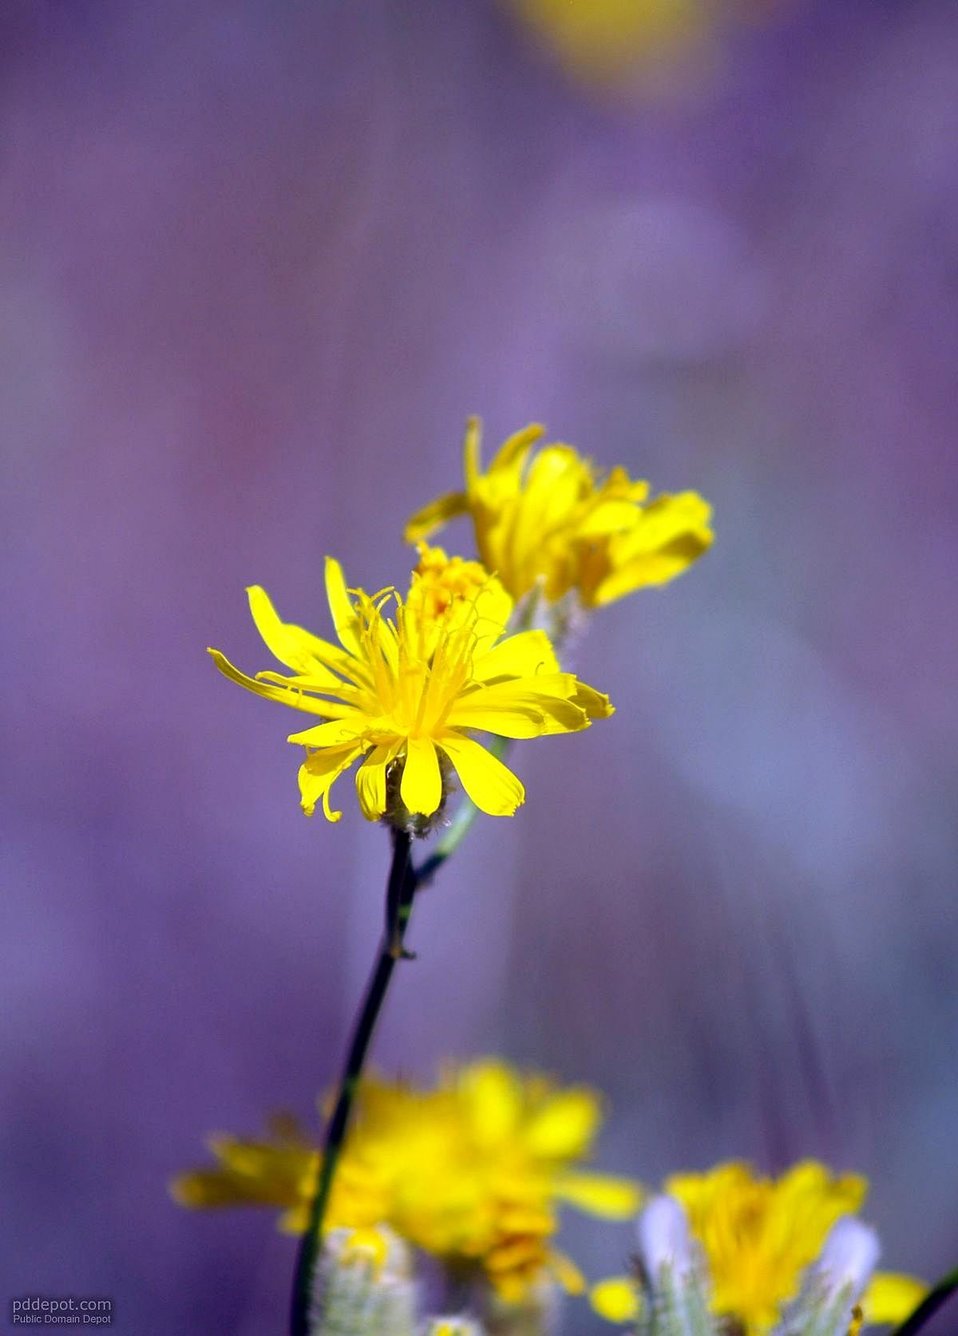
English:
Image title: Beautiful yellow mountains flowers Image from Public domain images website, http://www.public-domain-image.com/full-image/flora-plants-public-domain-images-pictures/flowers-public-domain-images-pictures/beautiful-yellow-mountains-flowers.jpg.html